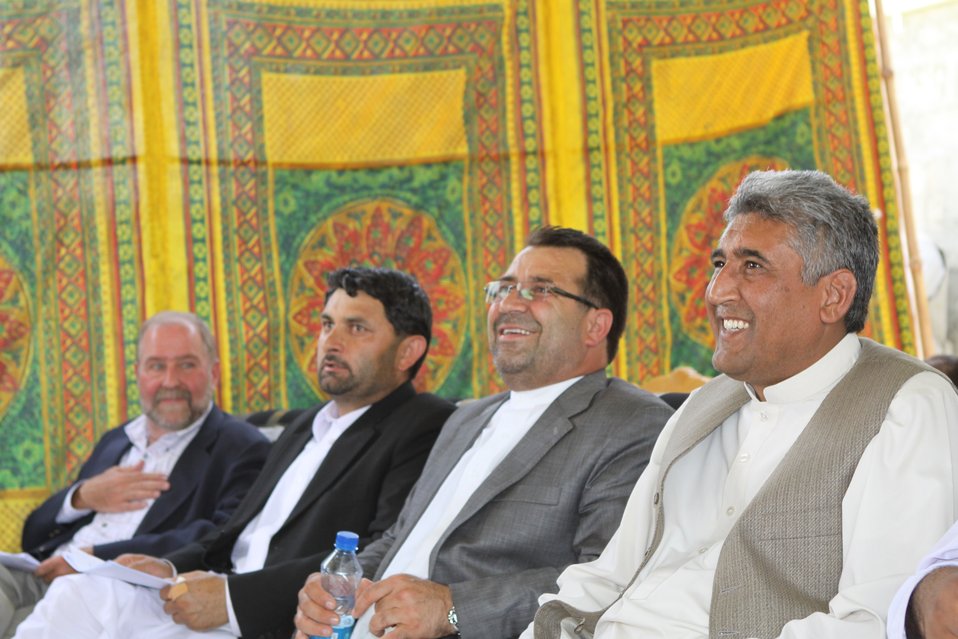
Bolan Poultry Farm